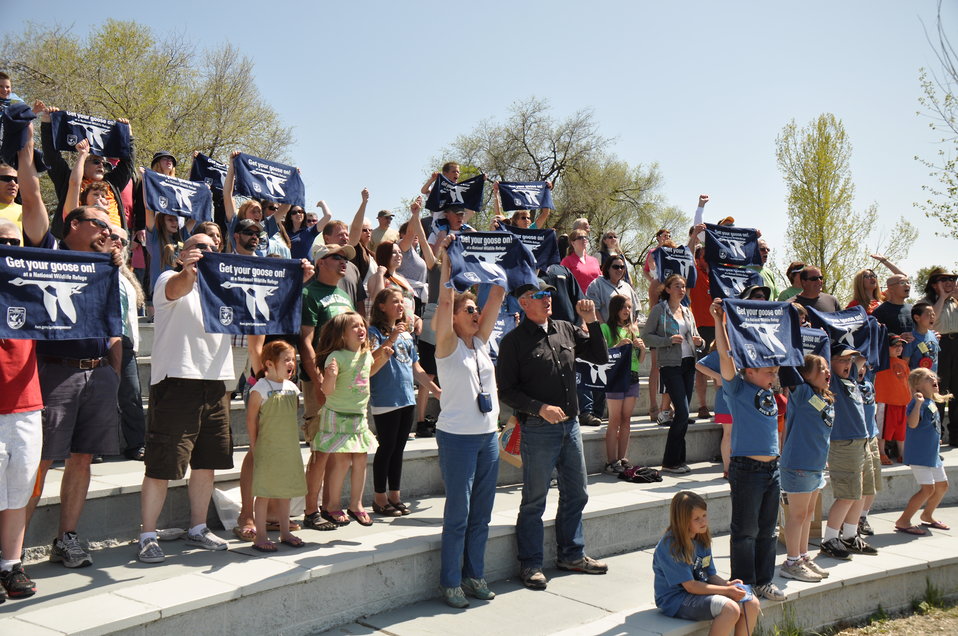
Get Your Goose On!!!

More than 100 people attended the 2012 Montana Junior Duck Stamps award ceremony. The folks pictured here posed with their towels as a videographer captured footage of them screaming, in unison, 'Get Your Goose On!'